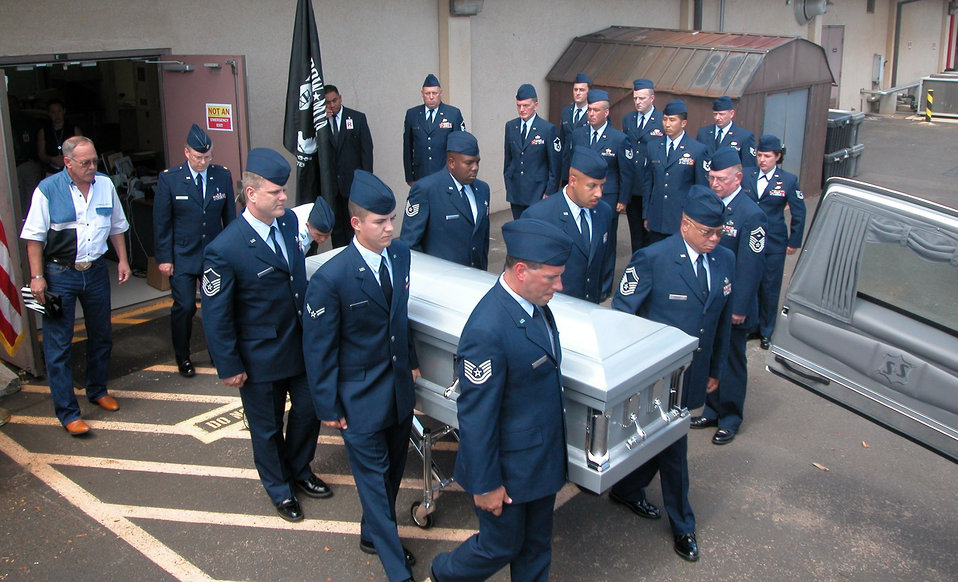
Officials return Vietnam War remains to family

HICKHAM AIR FORCE BASE, Hawaii -- Airmen of the 36th Aerial Port Squadron carry the remains of Col. Lester Holmes out of the Joint POW/MIA Accounting Command here May 18. Colonel Holmes' son, Senior Master Sgt. Roger Holmes, is the first sergeant for the squadron based at McChord Air Force Base, Wash. The colonel was missing in action in Vietnam since May 22, 1967. His remains were recently identified after they were recovered in 1998, and he will be laid to rest May 22 with full military honors in Nashua, Iowa.